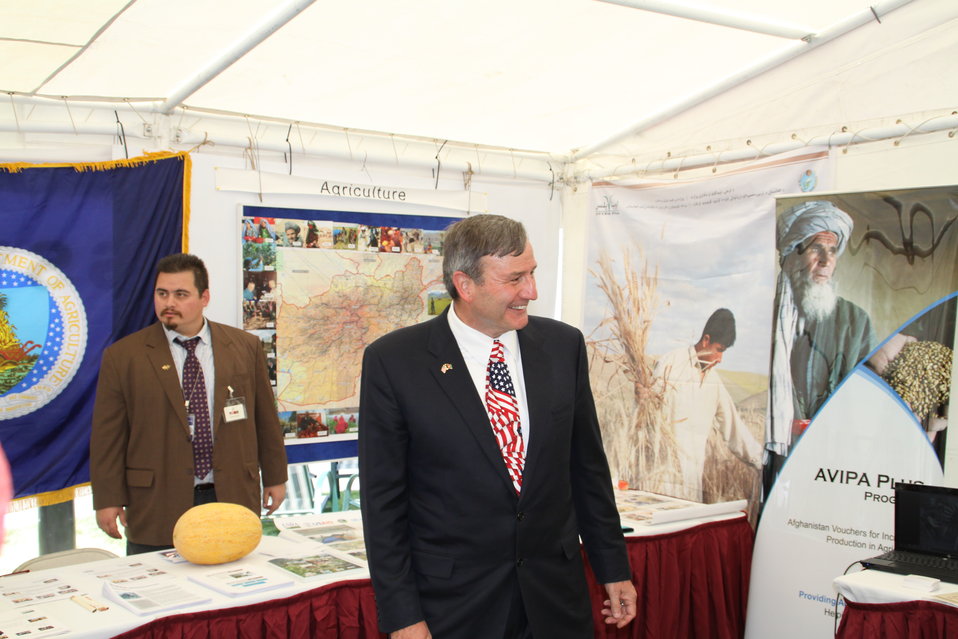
Kabul Official July 4th Celebration